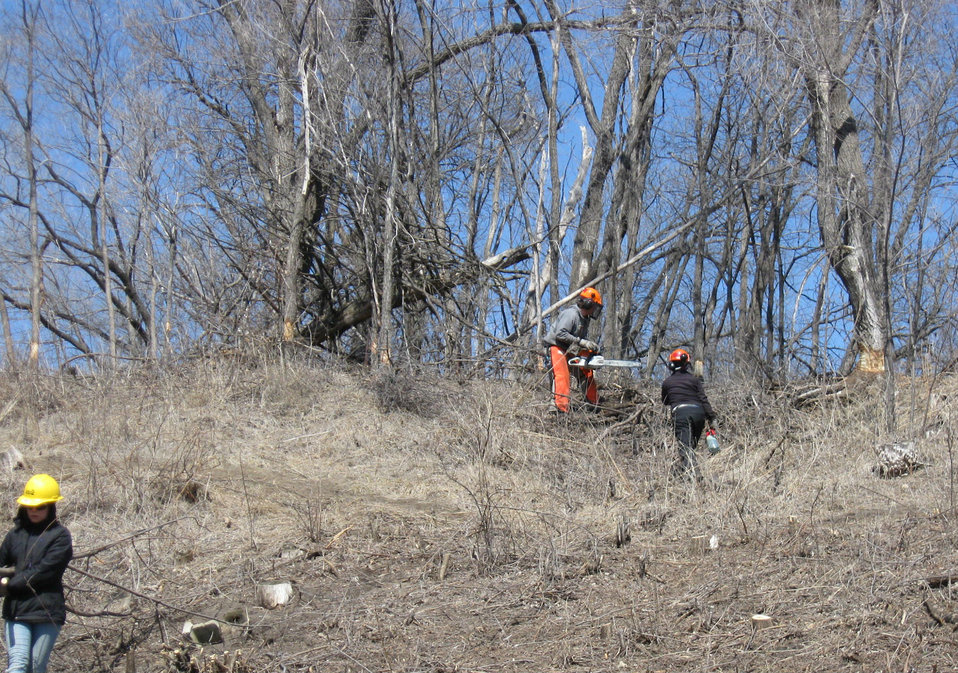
Using Hand Tools

Crews used hand saws and chainsaws to cut small stems and girdle trees.